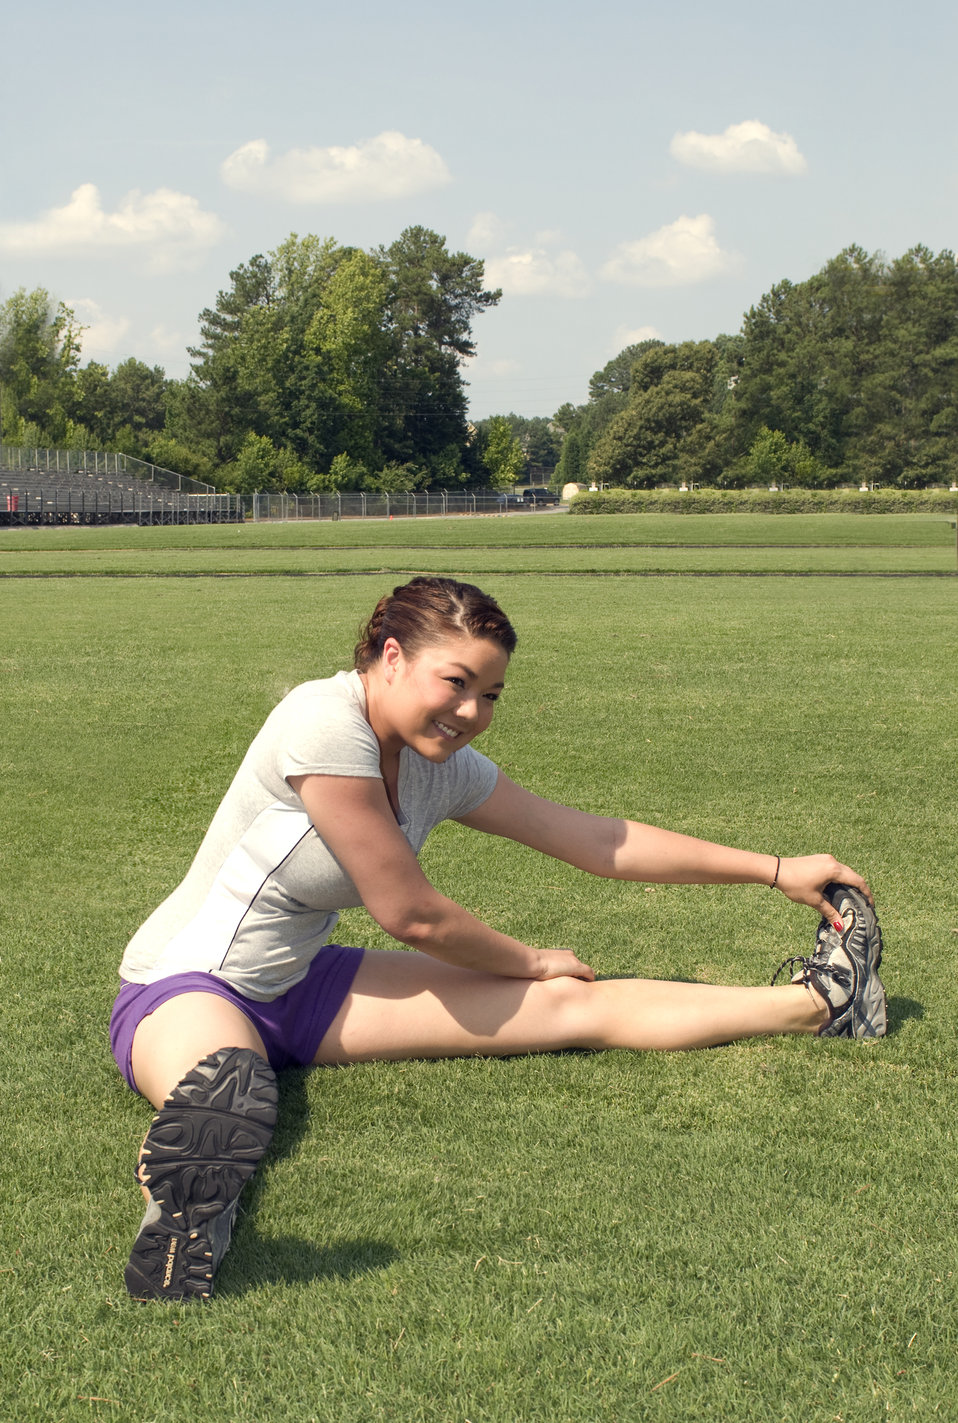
A young woman stretching before exercise

Photographed at a Georgia track field, this young woman was in the process of warming up prior to participating in some 'vigorous-intensity aerobic activity' on this sunny day. She was shown here stretching her inner thigh and groin muscles in order to avoid the possibility of a muscle strain-related injury during her exercise routine.